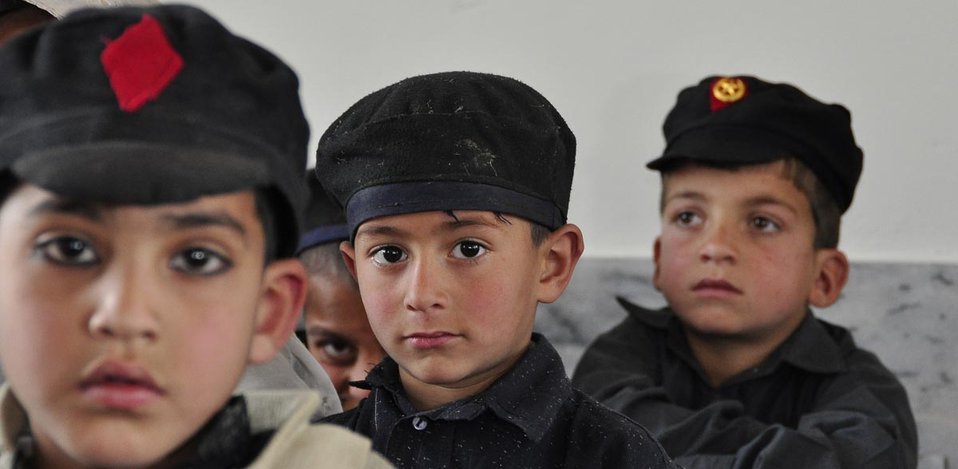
Buner School

Peshawar, March 14, 2012 - The Provincial Reconstruction, Rehabilitation and Settlement Authority (PaRRSA) handed over today to the KP Education Department the first of the 122 U.S. Government-sponsored schools at Torwarsak, Buner.